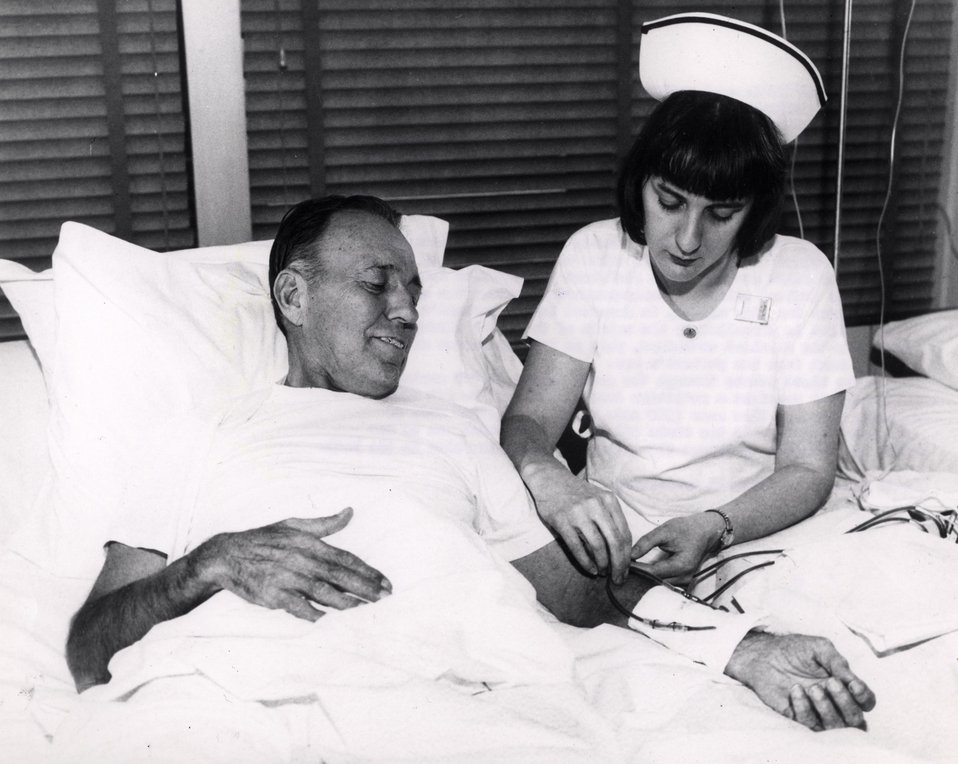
A patient is undergoing treatment for leukemia by extracorporeal irradiation of his blood. The nurse is about to connect the arteriosclerosis shunt in the patient's forearm to the tubing leading into a shielded container where the gamma ray source is located.
c.1966